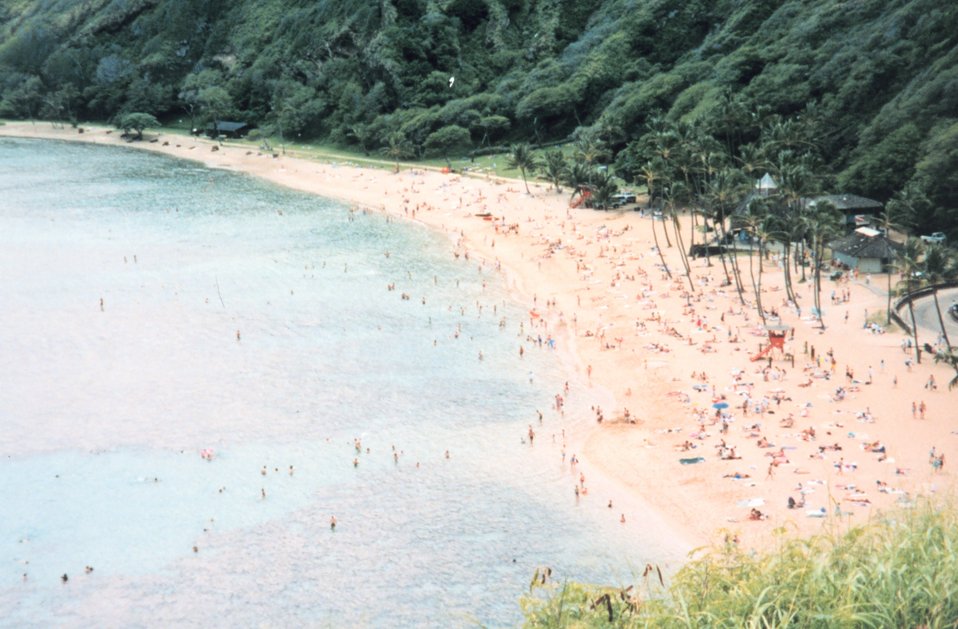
Hanauma Bay, southeast coast of Oahu. A popular bathing and diving beach.